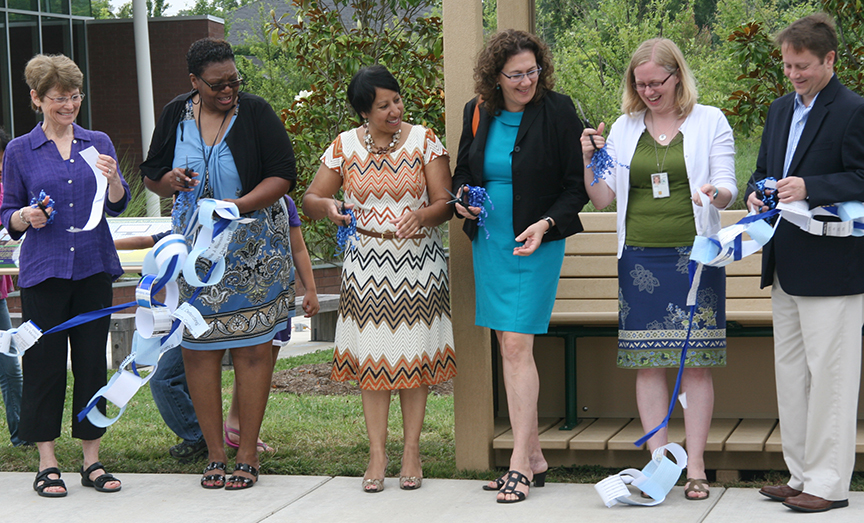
June 22 - The cutting of the recycled ribbon

Public officials and EPA staff cut the ribbon, made out of recycled paper and put together by children at First Environments Early Learning Center.